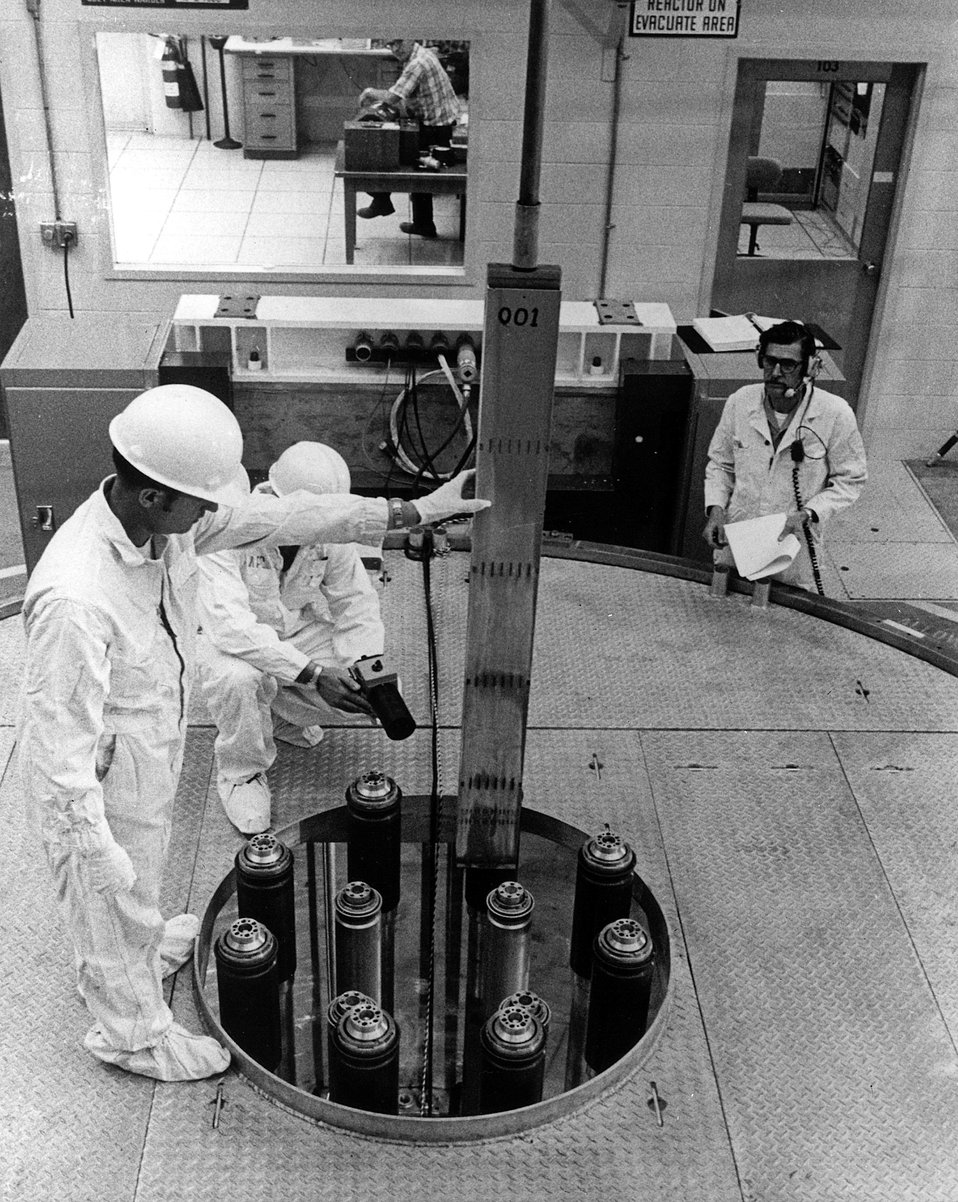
Technicians load the PBF (Power Burst Facility) reactor at the Atomic Energy Commission's National Reactor Testing Station in Idaho. Circa 1972.